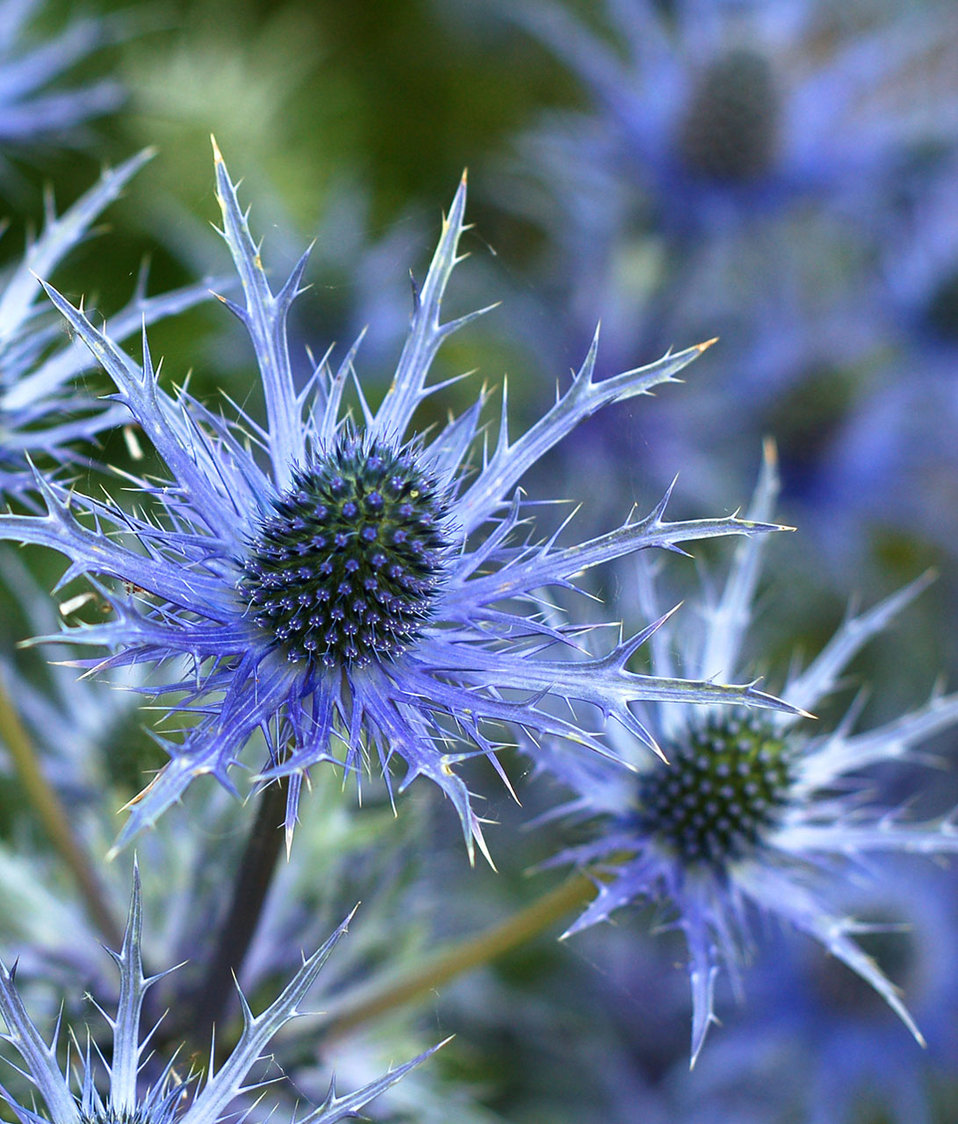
Alien plant

Some kind of a really strange, blue coloured plant.